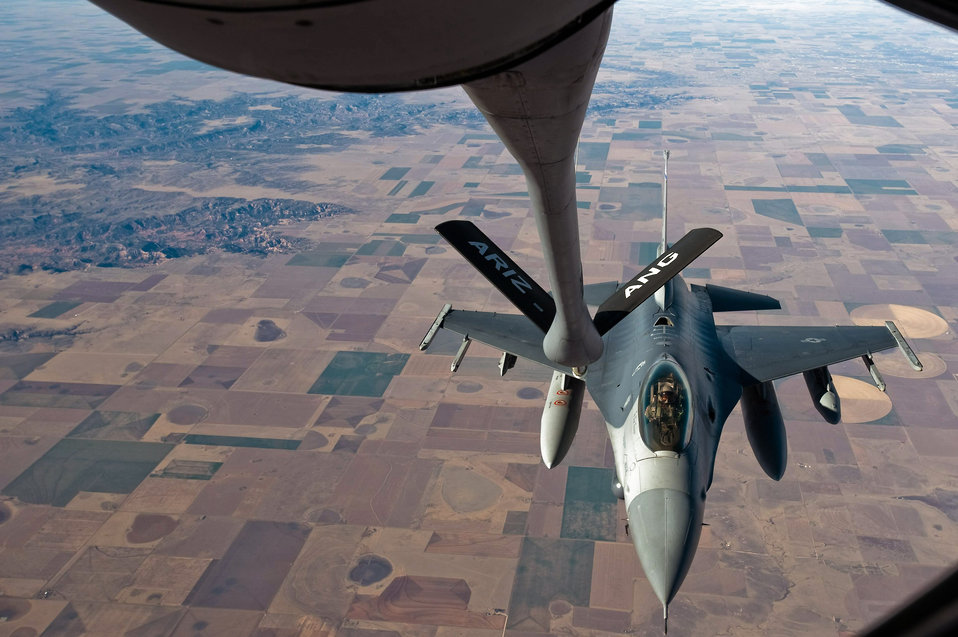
Gas and go

An F-16 Fighting Falcon prepares to get into position to receive fuel from a KC-135 Stratotanker Dec. 1 over the Southwestern United States. The F-16 was en route to Barksdale Air Force Base, La., to take part in Green Flag East, a pre-deployment exercise for Air Combat Command flying units that perform close-air support and precision-guided munitions delivery. The F-16 is from the 120th Fighter Squadron of the Colorado Air National Guard.